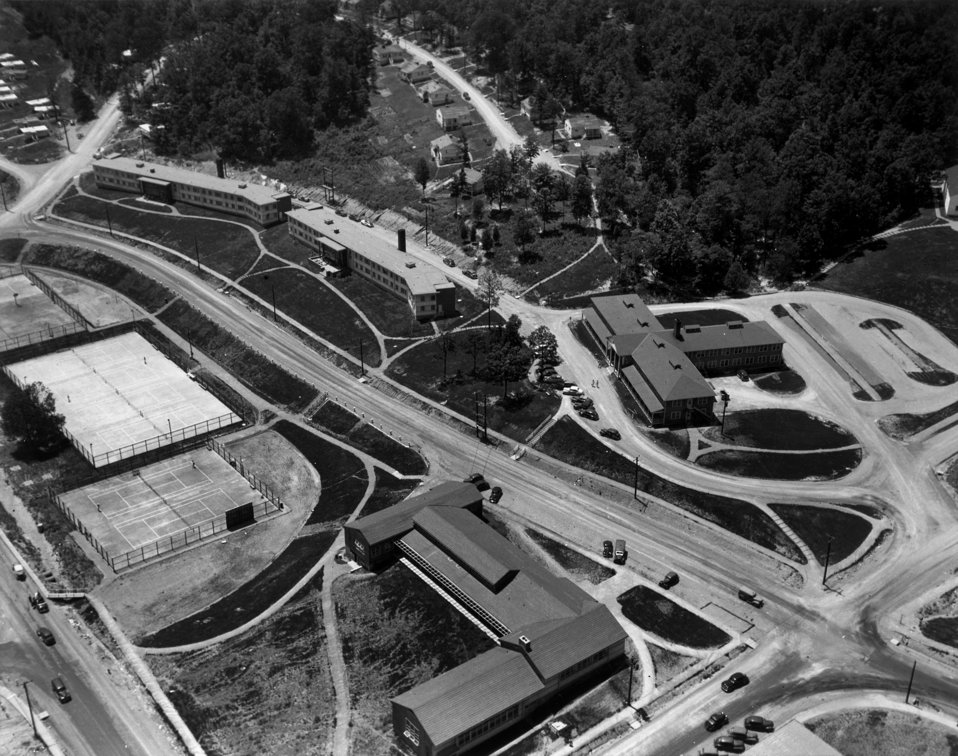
Jackson Square Area (Townsite) Broadway Avenue Oak Ridge

1565 DOE photo by Ed Westcott Jackson Square Area (Townsite) Broadway Avenue Oak Ridge Tennessee 3-14-1946